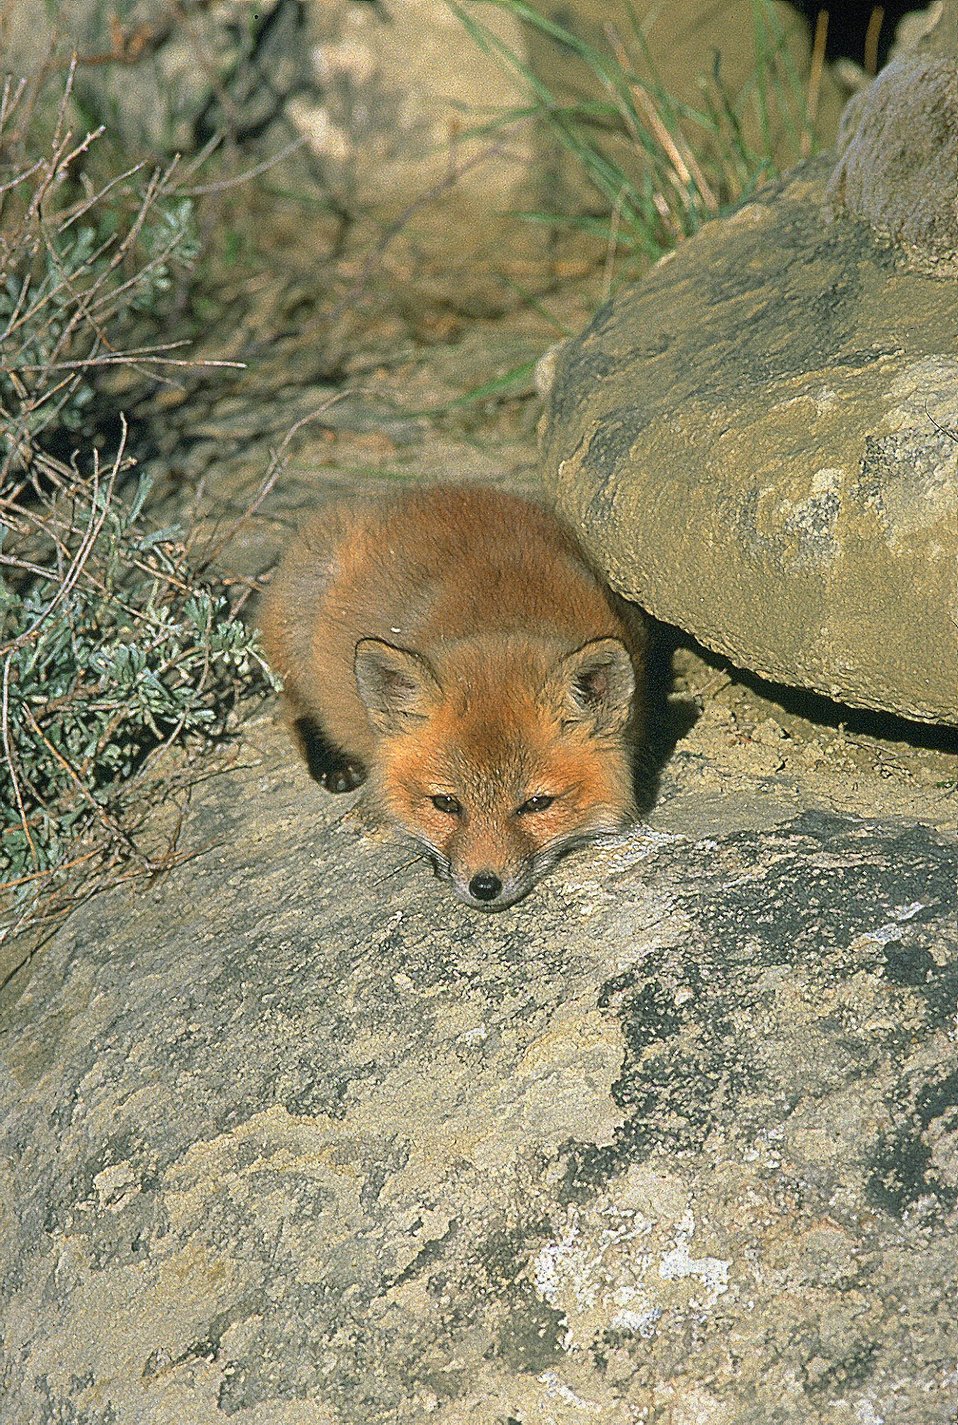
Red fox napping